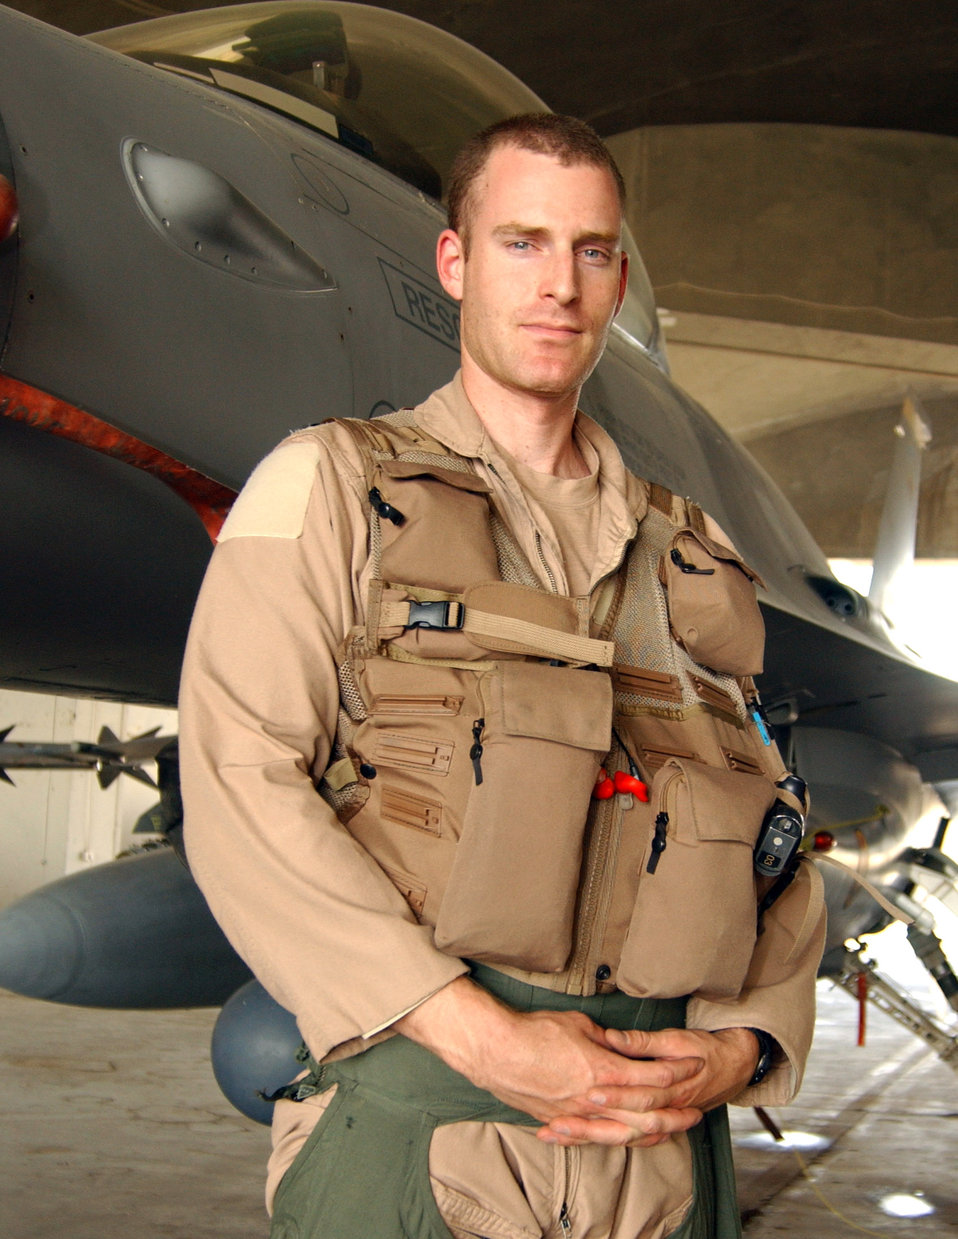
A potential for disaster

First Lt. Michael Seltzer stands with the jet that malfunctioned at the end of a mission he flew recently over Iraq. Lieutenant Seltzer is an F-16 Fighting Falcon pilot assigned to the 421st Expeditionary Fighter Squadron.